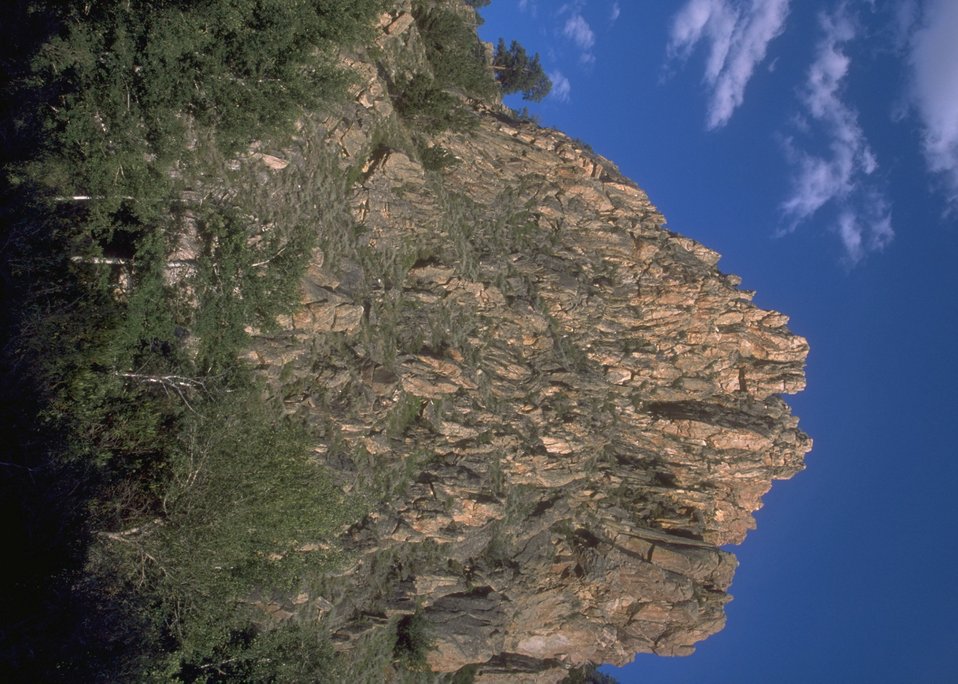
Landscape along the Alcova/Seminoe Back Country Byway, Rawlins Field Office.